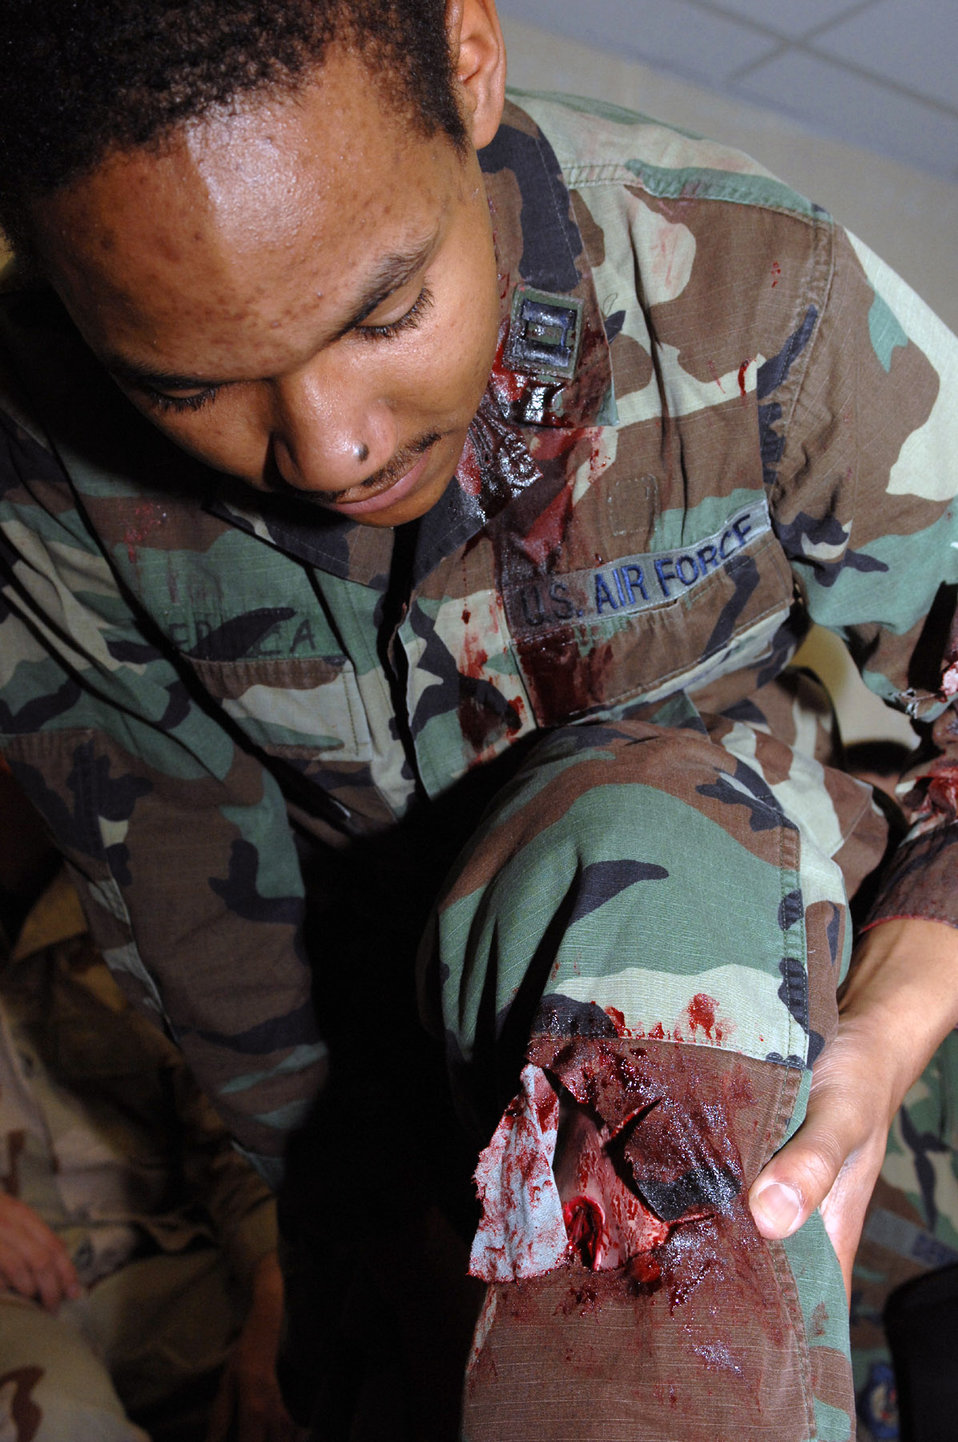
Blood, guts and moulage

Airman Brandon Proctor checks out his new leg injury moulage April 22 during Exercise Saber Crown 08-06 at Spangdahlem Air Base, Germany. The moulage helps make crises exercises more realistic. Airman Proctor is with the 606th Air Control Squadron.